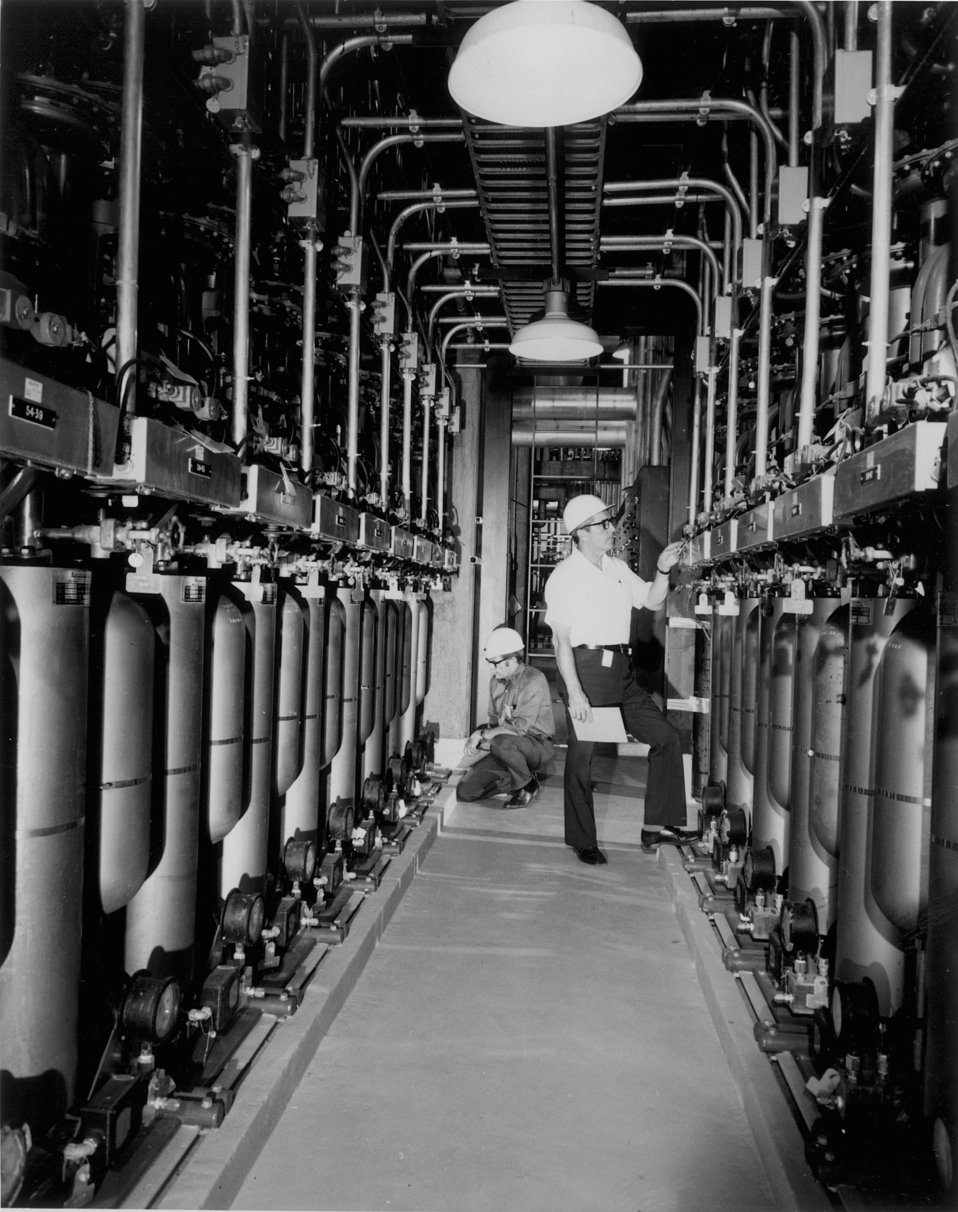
Nuclear Regulatory Commission inspectors W.S. Little and A.K. Hardin, working out of NRC's regional office at Atlanta, check control rod drive modules in the Tennessee Valley Authority's Browns Ferry Unit 1 nuclear power plant near Decatur, Alabama. Circa 1973.